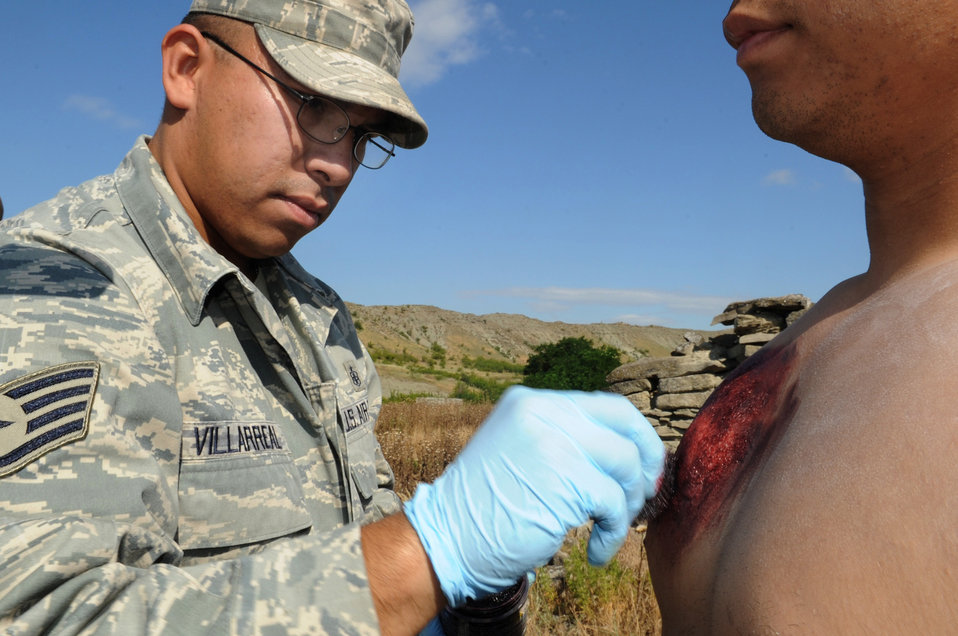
MEDCEUR 11

Staff Sgt. Ezequiel Villarreal prepares a